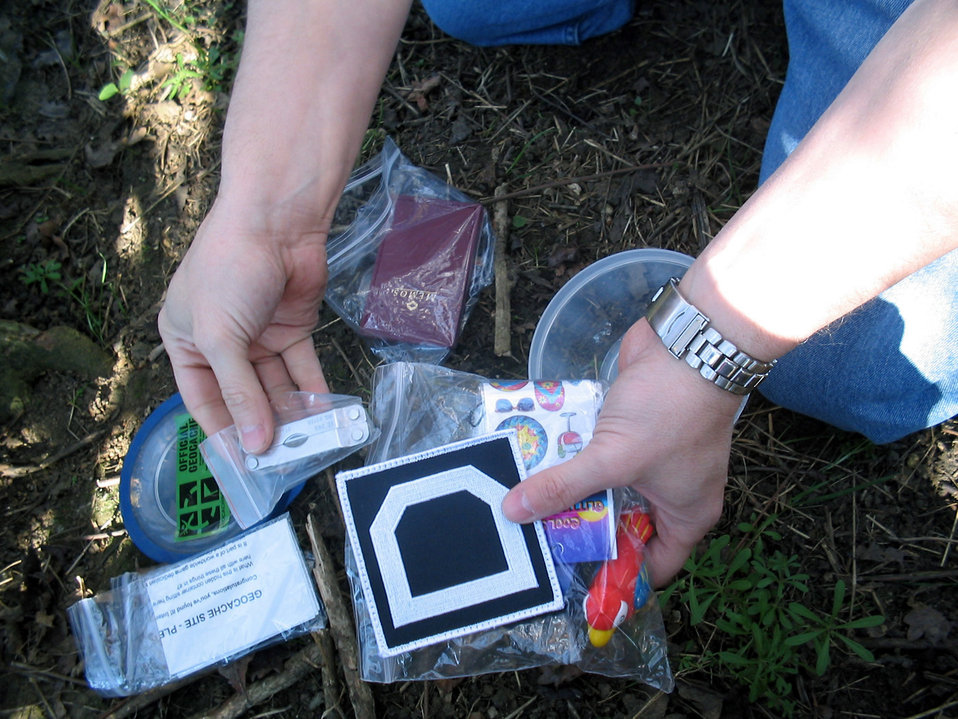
Geocaching

THORPE ABBOTTS, England -- In honor of the historic World War II bomb group, Maj. Anthony Gatlin leaves a Square D patch in a cache hidden here by Maj. Randall Ashmore. The patch was the World War II tail flash insignia used on nearby Royal Air Force Mildenhall's KC-135 Stratotankers. Major Gatlin is assigned to the 48th Medical Support Squadron, and Major Ashmore is the 100th Air Refueling Wing deputy director of staff.